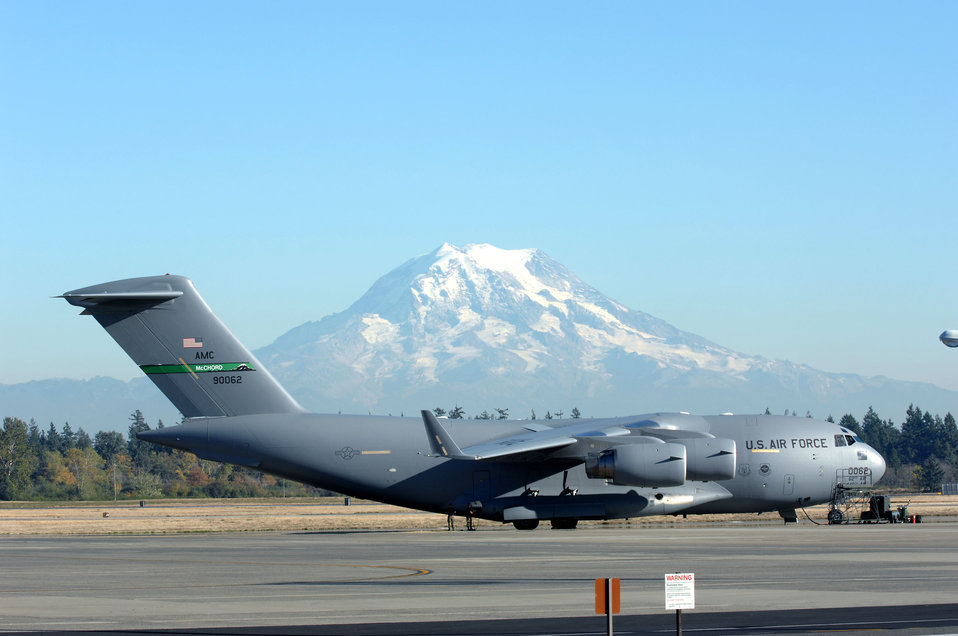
Global reach, global power

A C-17 Globemaster III sits on the fllightline at McChord Air Force Base, Wash. Each day, hundreds of McChord AFB Airmen support the global airlift mission from locations around the world.